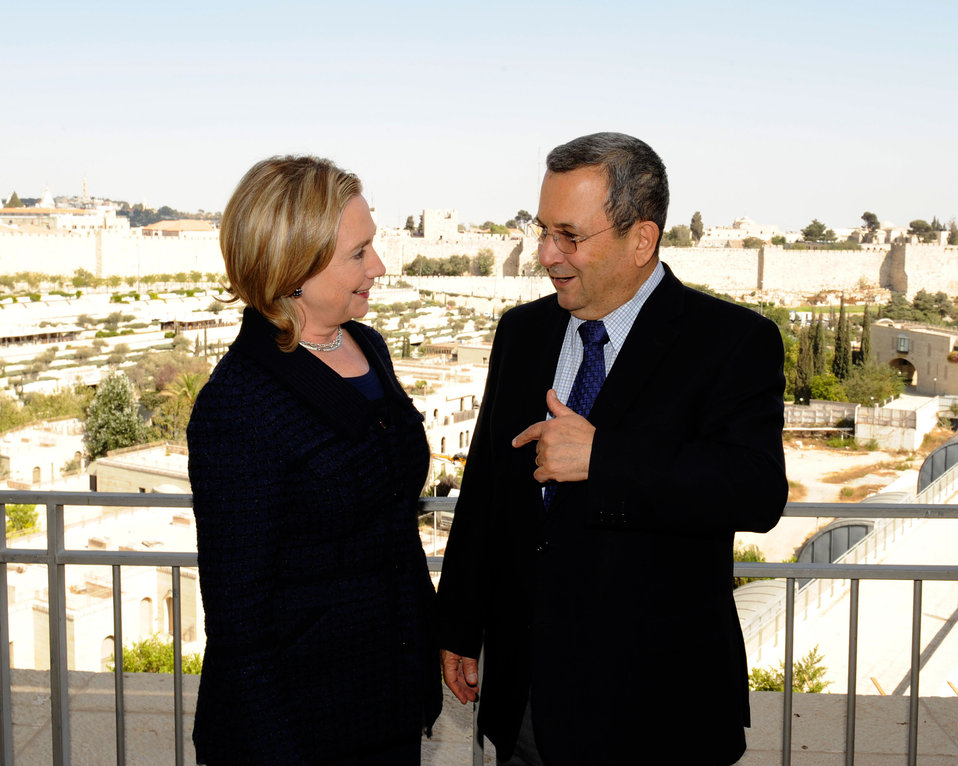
Israeli Defense Minister Barak Meets With Secretary Clinton

Israeli Defense Minister Secretary Ehud Barak meets with U.S. Secretary of State Hillary Rodham Clinton at the David Citadel Hotel in Jerusalem on September 15, 2010.